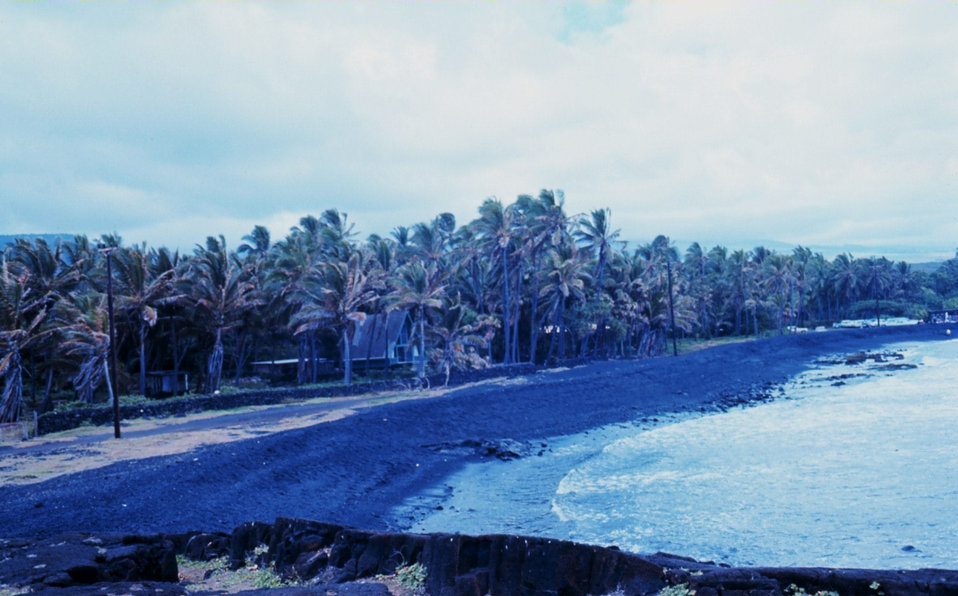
Punaluu Black Sand Beach